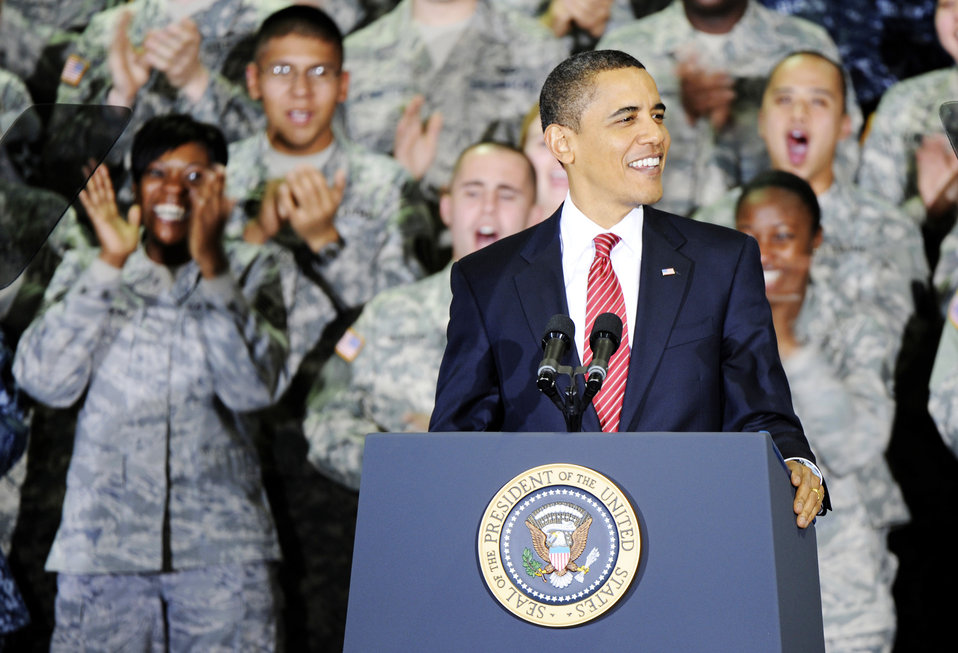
President Obama holds troop rally at Osan

President Barack Obama addresses U.S. servicemembers Nov. 18, 2009, at Osan Air Base, South Korea. This is President Obama's first visit to South Korea since taking office in January.